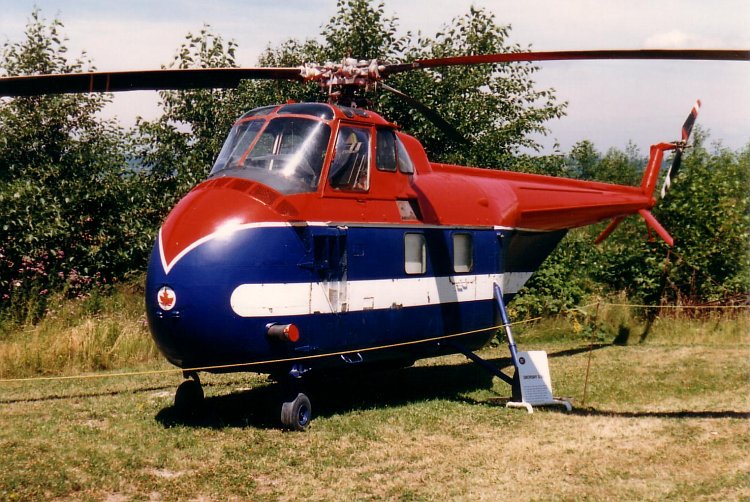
I took this photo of a Sikorsky S-55 in Mid Canada Line markings at the en:Canadian Museum of Flight on 23 July 1988.